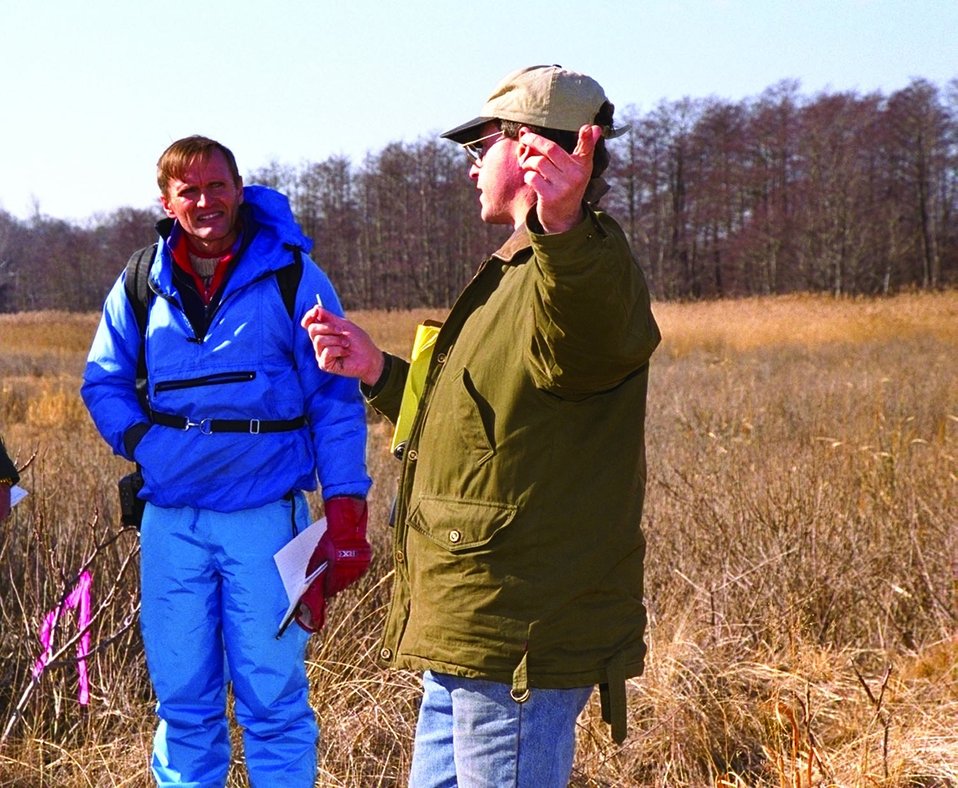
Eric Hutchins, NOAA, discusses restoration alternatives with a group of potential contractors and restoration partners.